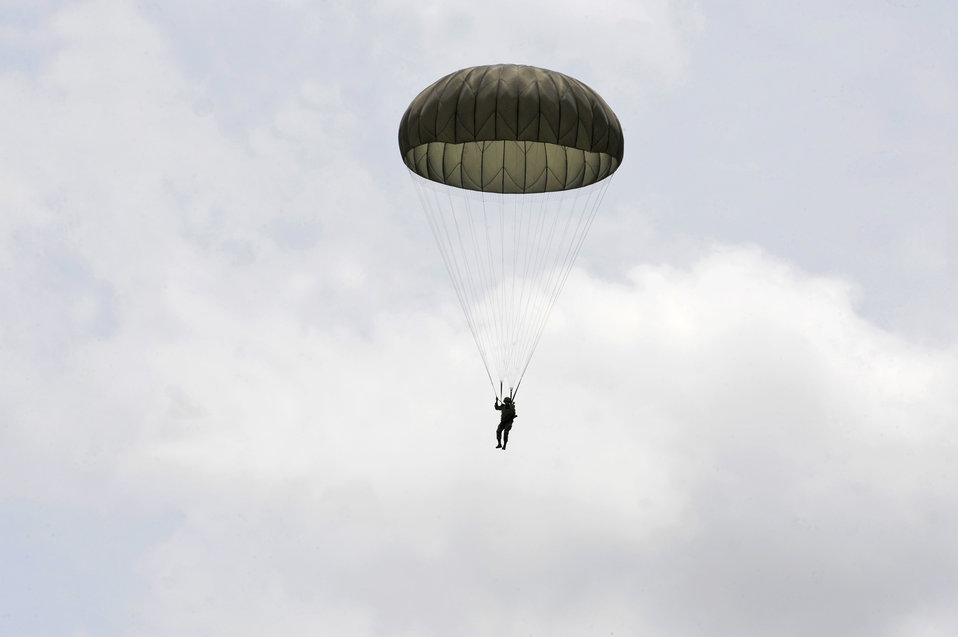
Rescue Airmen exchange knowledge, build partnerships with Colombian airmen

A Colombian military member parachutes to the ground after a static line jump from a Colombian C-130 Hercules Sept. 16, 2010, at Palanquero Air Base, Colombia. They successfully completed three static line and high-altitude, low-opening jumps during an exercise in which U.S. and Colombian aircrews exchanged information.